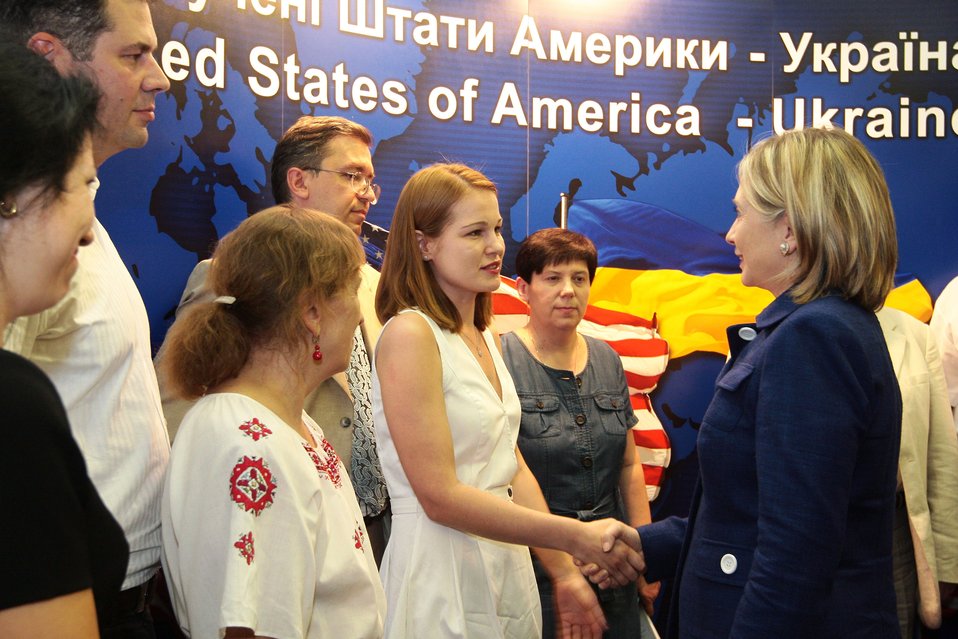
Secretary Clinton Meets With Members of Civil Society and NGO Representatives in Ukraine

U.S. Secretary of State Hillary Rodham Clinton meets with Ukrainian members of civil society and NGO representatives in Kyiv, Ukraine, on July 2, 2010.